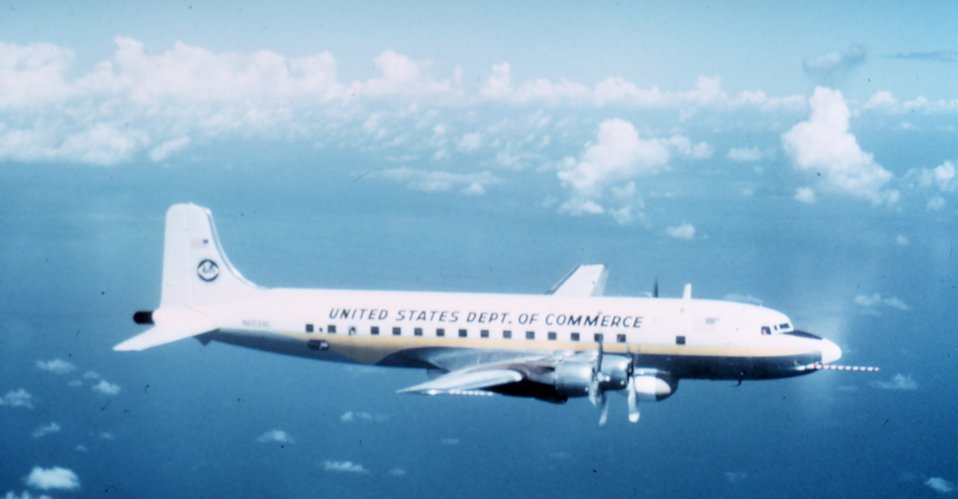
Weather Bureau DC-6 N6539C in flight.